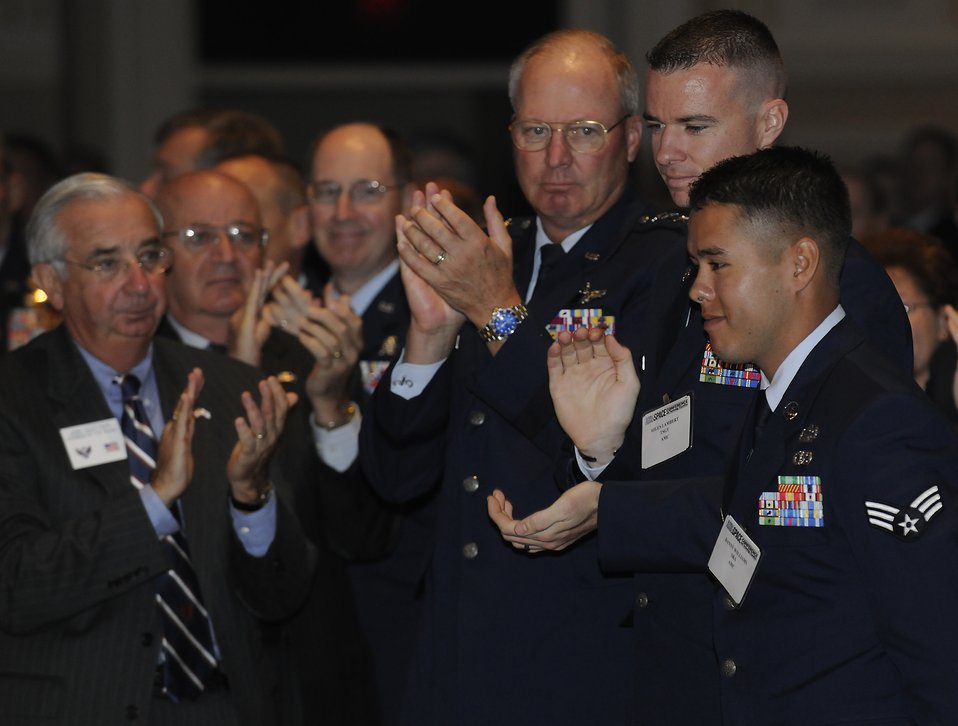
AFA

Senior Airman Danny Williams receives a standing ovation from attendees at the Air Force Association Air and Space Conference and Technology Exposition Sept. 15, 2009, at Oxon Hill, Md. Air Force Chief of Staff Gen. Norton Schwartz heralded Airman Williams during his keynote address as an example of the today's hero Airmen.